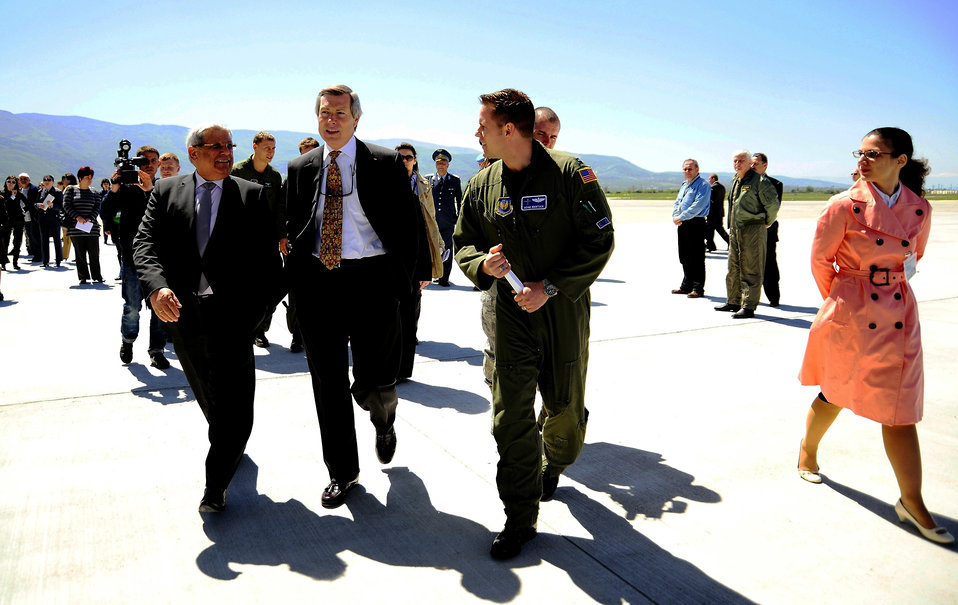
Dignitaries visit U.S., Bulgarian exercise

Capt. Adam Wantuck escorts Bulgarian Minister of Defense Anu Anguelov and U.S. Ambassador to Bulgaria James B. Warlick Jr. to a static display of a C-130J Hercules during Operation Thracian Spring 2010's media day April 27, 2010, at Plovdiv Airport in Bulgaria. Captain Wantuck is a C-130J pilot from the 37th Airlift Squadron.